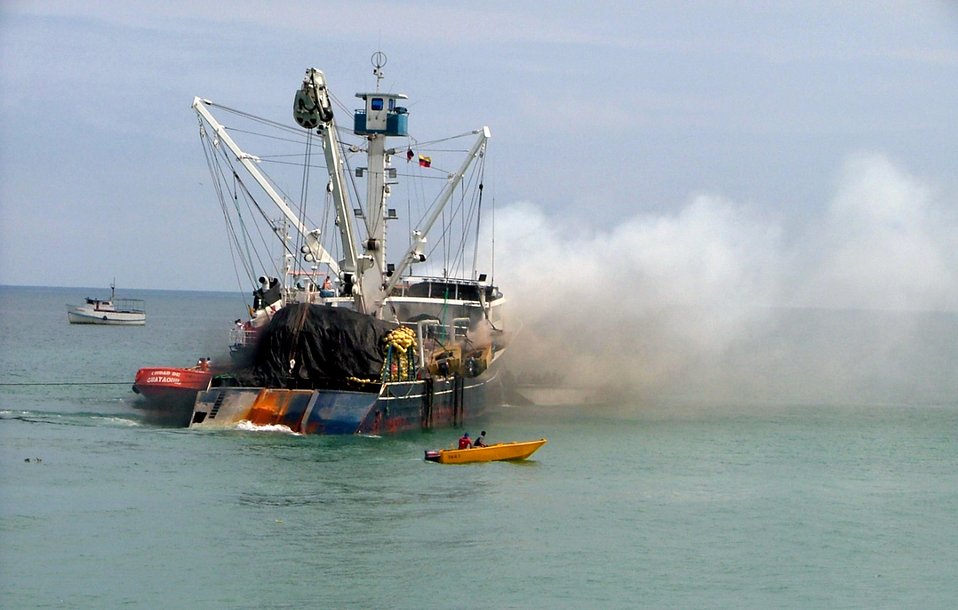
FOL Manta firefighters assist local firefighters

Members from the Forward Operating Location Manta, Ecuador, fire department assisted local authorities in response to a fishing boat fire.